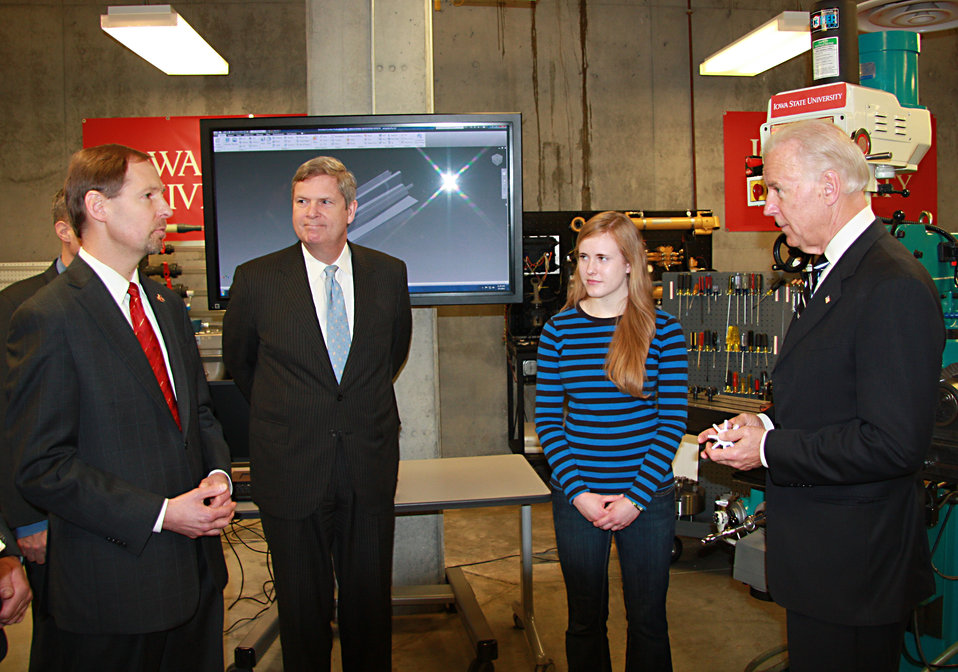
Agriculture Secretary Tom Vilsack and Vice President Joe Biden tour the Make2Innovate Lab in Howe Hall at the College of Engineering, Iowa State University in Ames, IA, on Thursday, March 1, 2012.